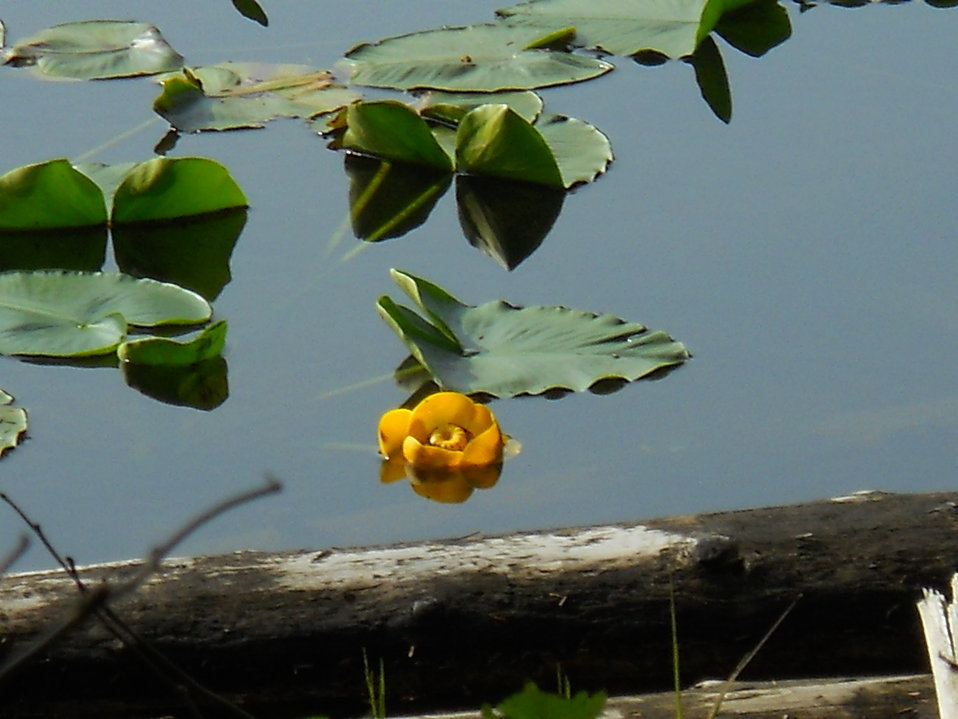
Pond Lily Flower

Credit: USFWS
Photo taken by a Salmon Camp participant during a nature photography activity.

Source and Contact: Kodiak National Wildlife Refuge